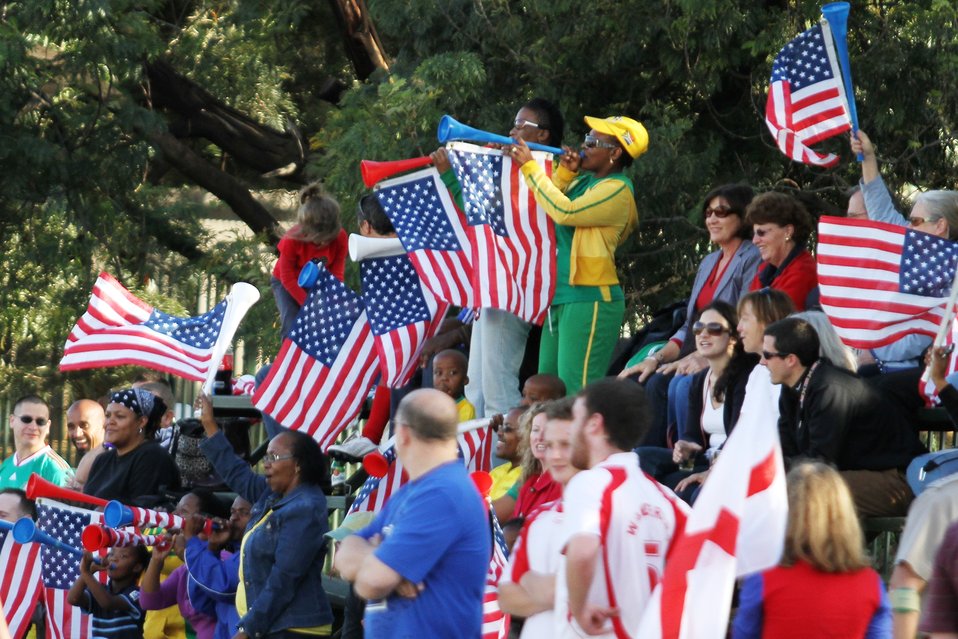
U.S. Embassy Pretoria staff fans cheer on their colleagues in the U.S. Embassy Pretoria vs. British High Commission match on May 28, 2010, in Pretoria, South Africa. The match was part of a series of challenge events aimed at building the friendly rivalry and excitement before the World Cup match between the U.S. National Team and the English National Team in Rustenburg, South Africa, on June 12, 2010.